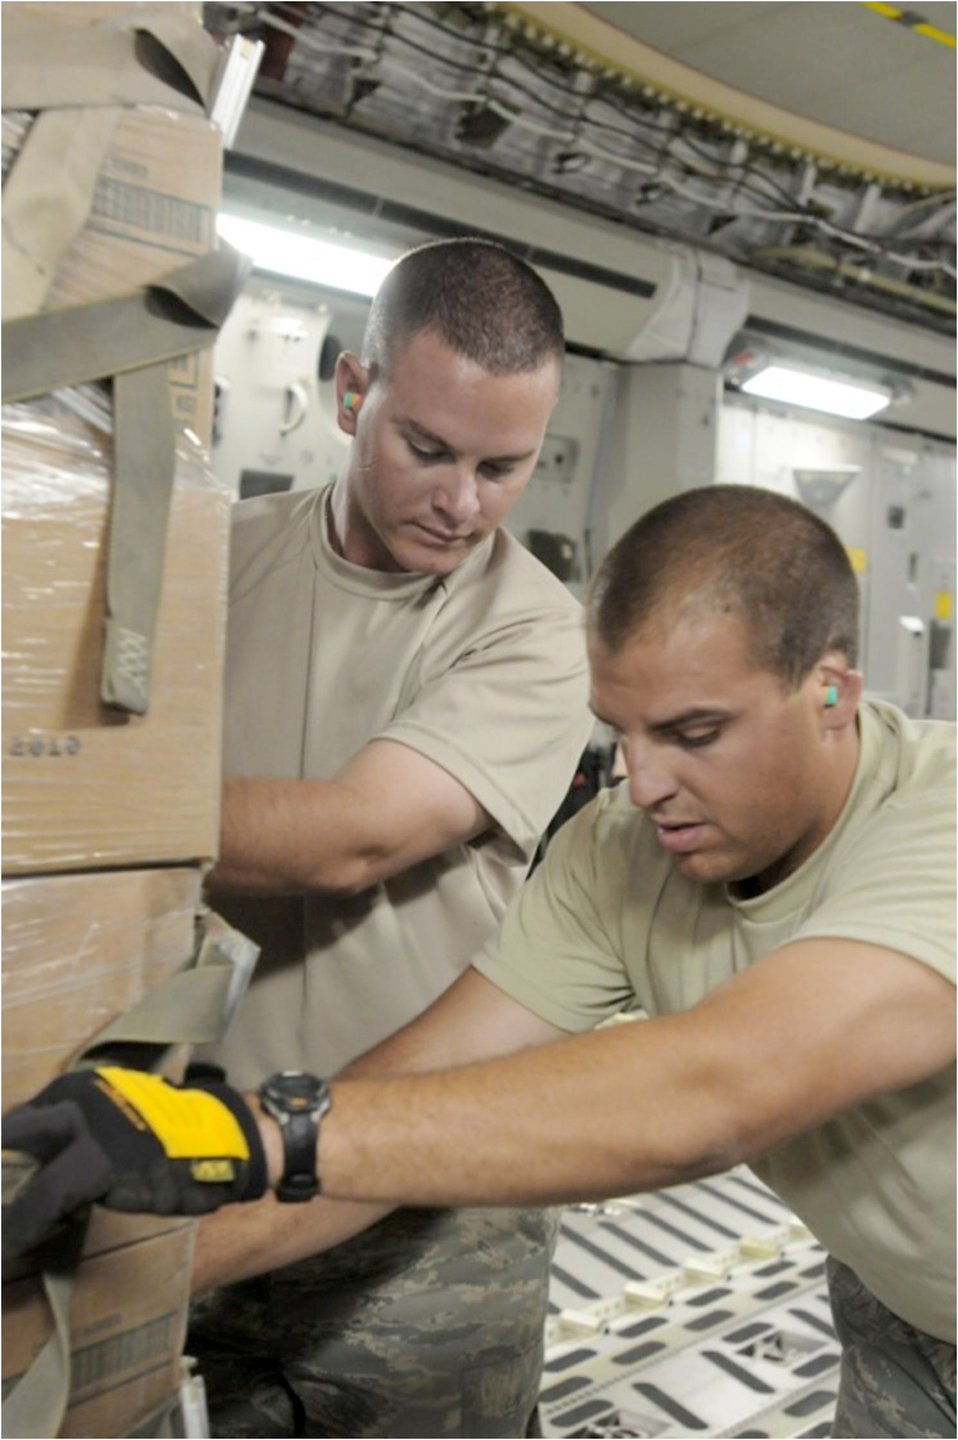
Teamwork provides relief

Tech. Sgts. Gregory Boshears and Kevin Paridee load a pallet of halal meals onto a C-17 Globemaster III Aug. 2, 2010, at Bagram Airfield, Afghanistan, for transportation into the flood-stricken areas of northwest Pakistan. Sergeants Boshears and Paridee are members of the 455th Aerial Port Squadron.